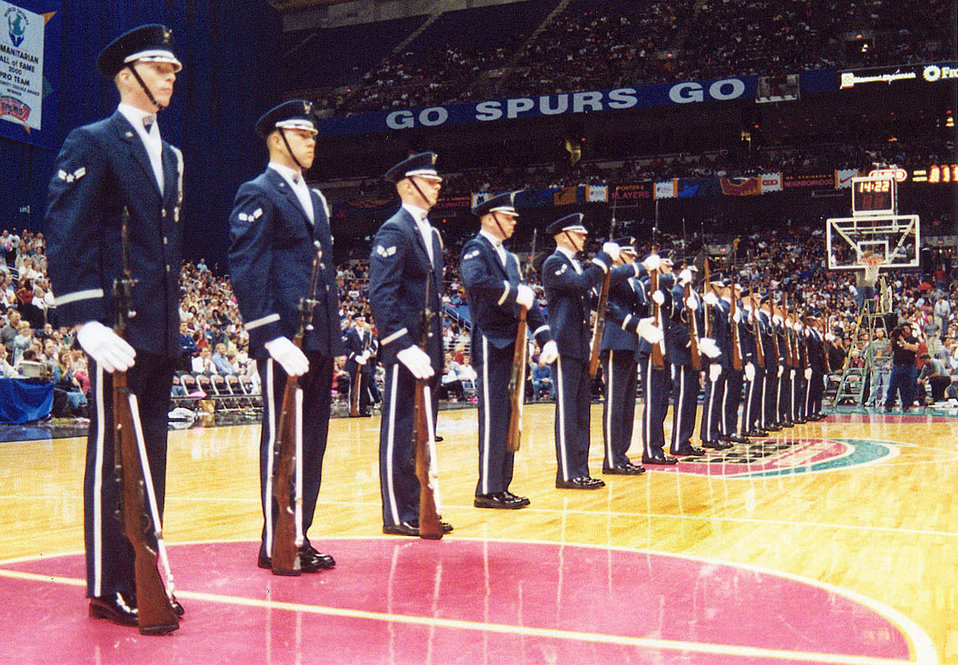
Honor Guard

SAN ANTONIO -- The U.S. Air Force Honor Guard, assigned to the 11th Wing at Bolling AFB, D.C., performed before a crowd of 31,759 at the San Antonio Spurs - Minnesota Timberwolves National Basketball Association division playoff game April 23, 2001 at the Alamodome in San Antonio. Spurs fans cheered loudly in support of the 20-man team as its members tossed rifles in a powerful display of military professionalism and discipline.